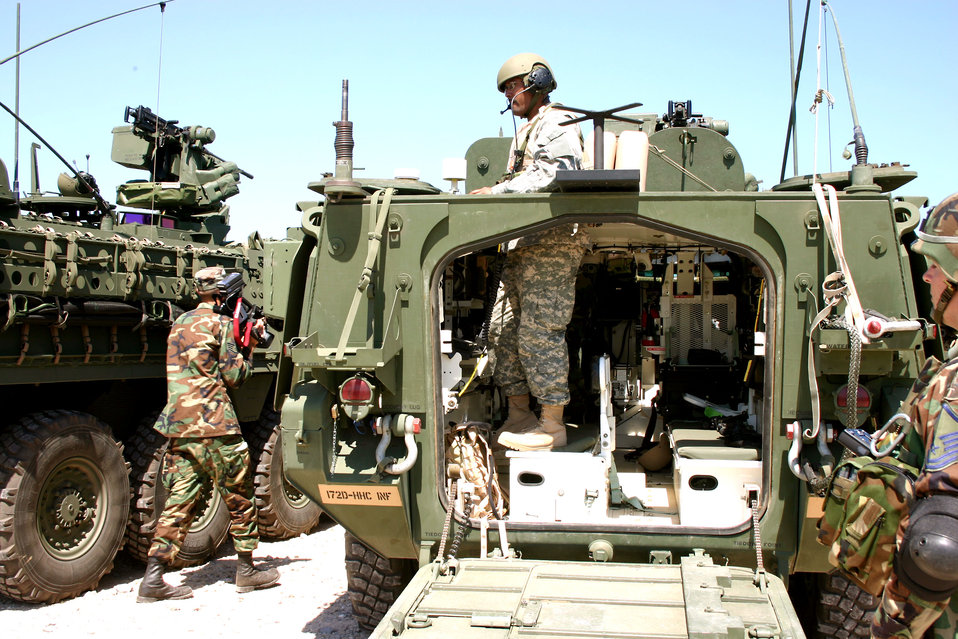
FORT POLK, La. -- An Airman from the 3rd Air Support Operations Squadron stands inside the Stryker armored vehicle added to the Air Force inventory during a May 5 ceremony at Fort Polk, La., where Airmen will train with the Stryker alongside Soldiers from the 172nd Stryker Brigade Combat Team in preparation for an upcoming deployment to Southwest Asia.